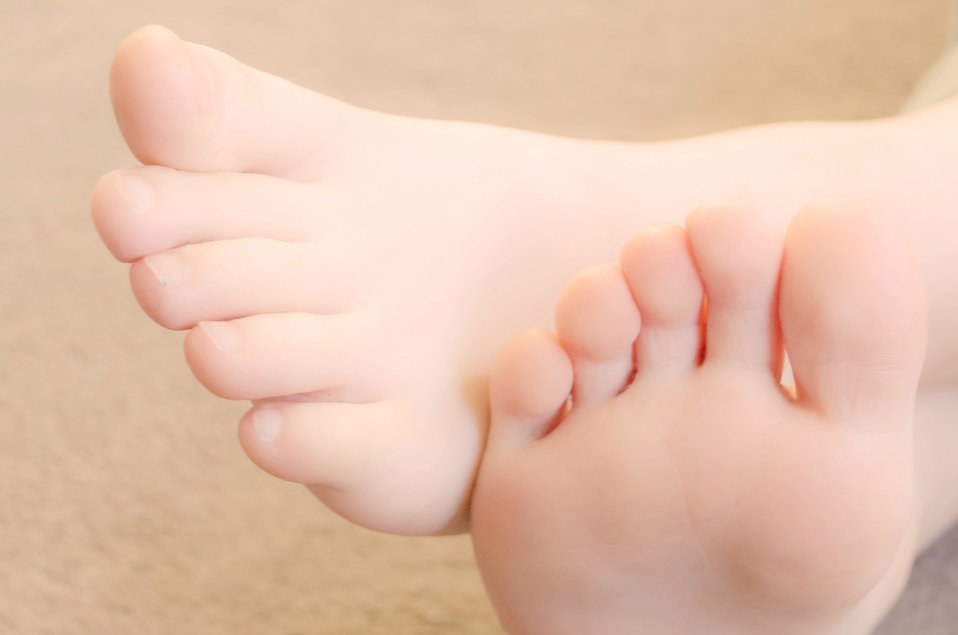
Child's foot.